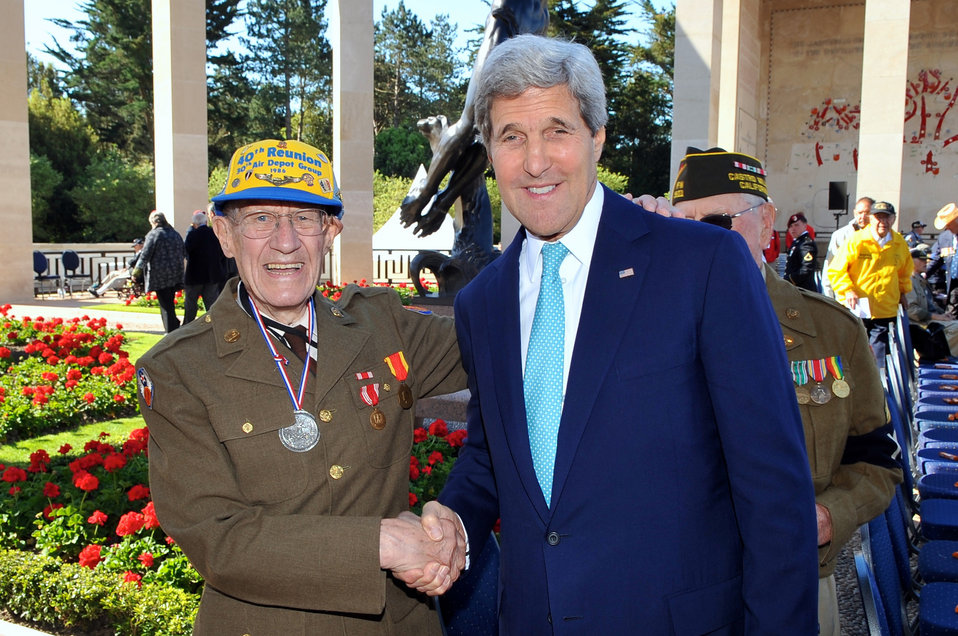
Secretary Kerry Meets D-Day Veteran Before 70th Anniversary Commemoration

U.S. Secretary of State John Kerry meets a D-Day veteran before the 70th anniversary commemoration in Normandy, France, on June 6, 2014.